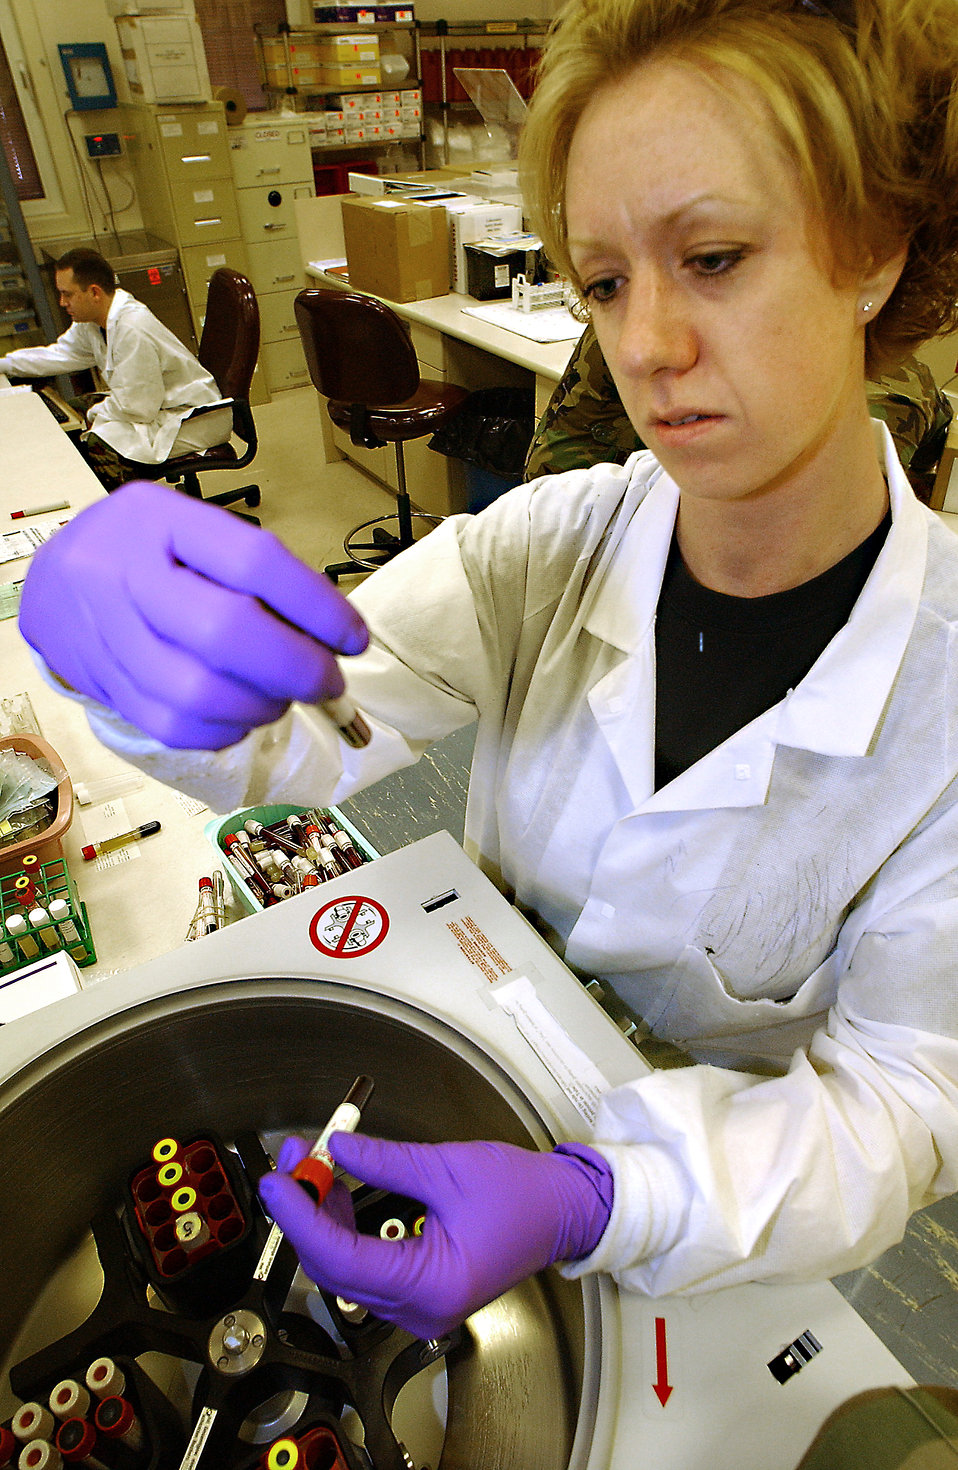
It's a bloody job...

ROYAL AIR FORCE MILDENHALL, England -- Airman 1st Class Stephanie Ambler inserts vials of blood into a centrifuge to separate plasma from red blood cells here April 13. The blood came from donors during a monthly blood drive. Once testing is complete, the blood will be used locally within 42 days. Airman Ambler is assigned to the 48th Medical Support Squadron.